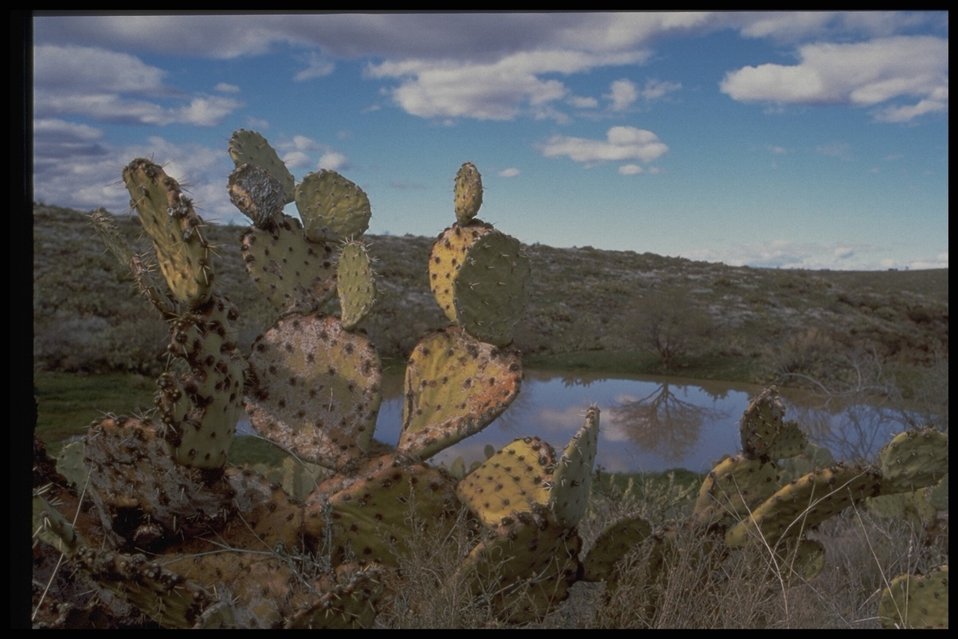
Prickly Pear cacti grow along the Agua Fria River in the Agua Fria National Monument.